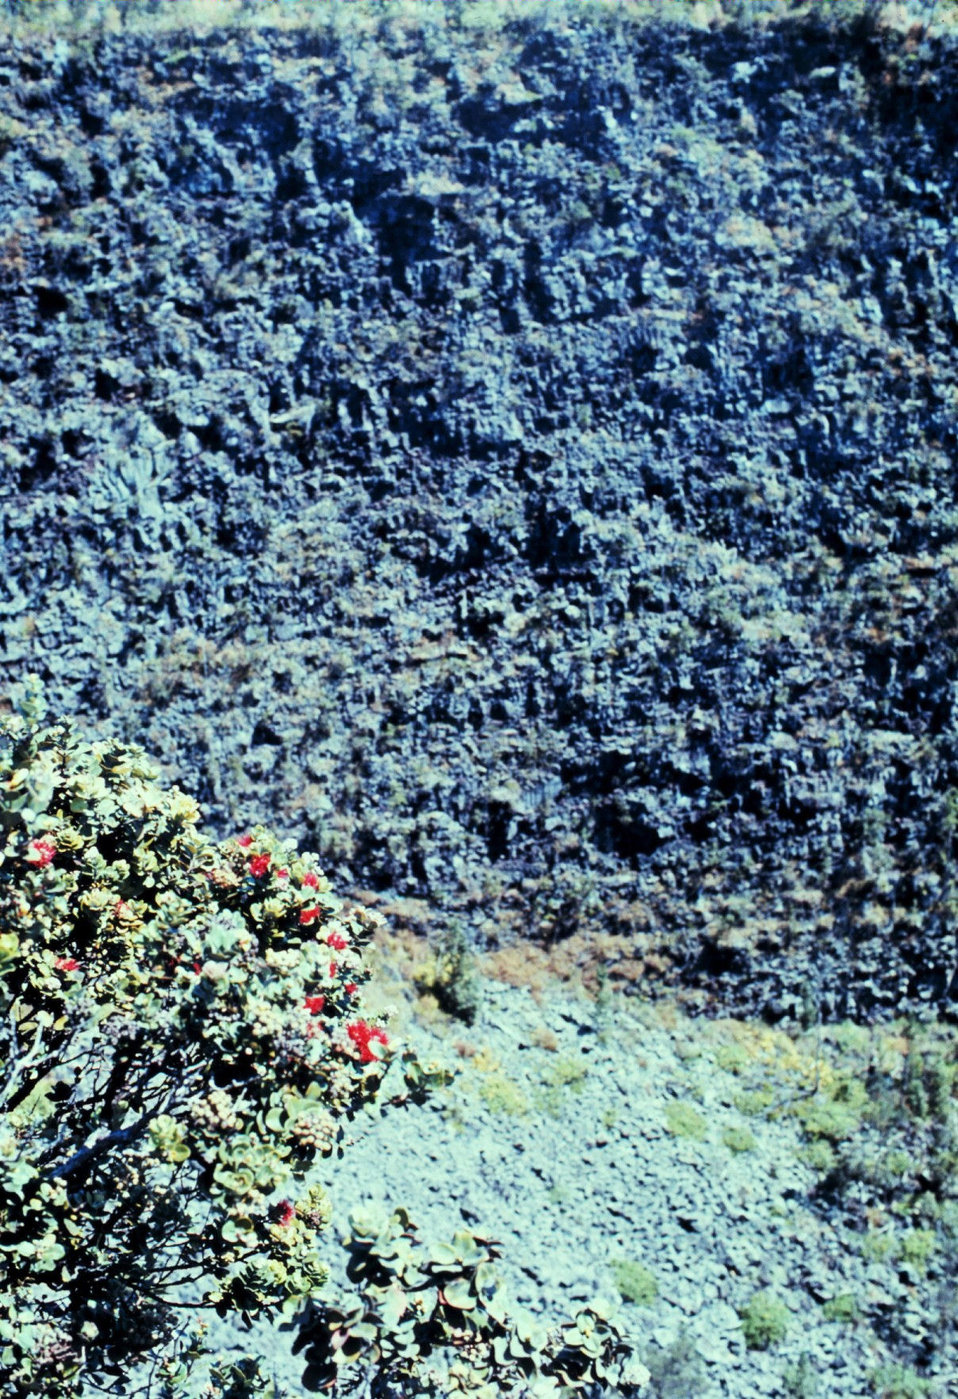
Volcanic cliff with red flowers in foreground.